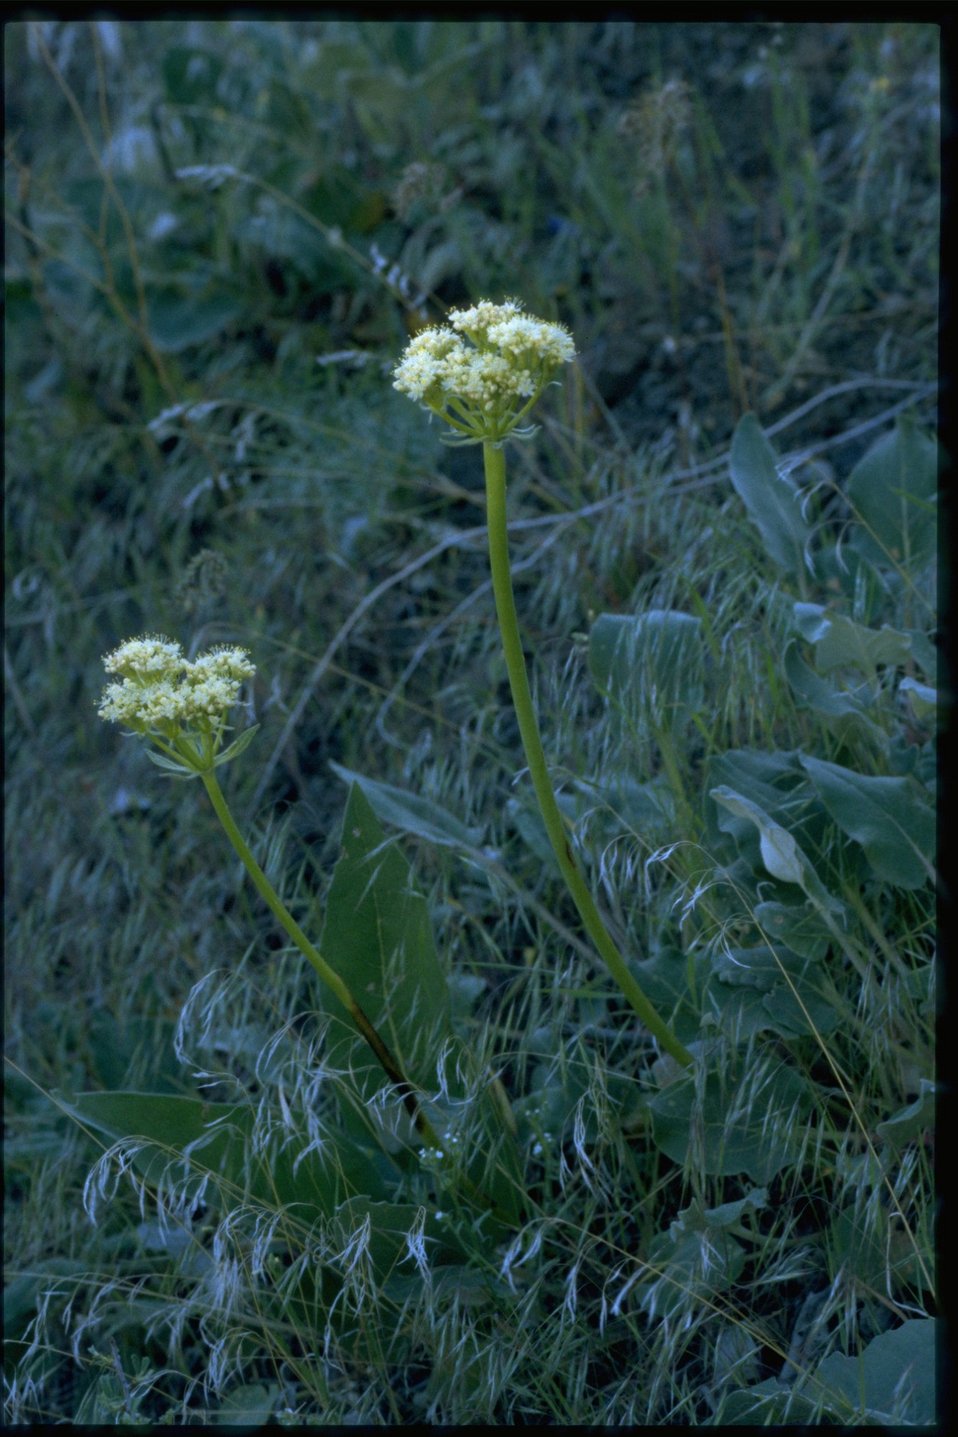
Medium shot of Apiaceae.